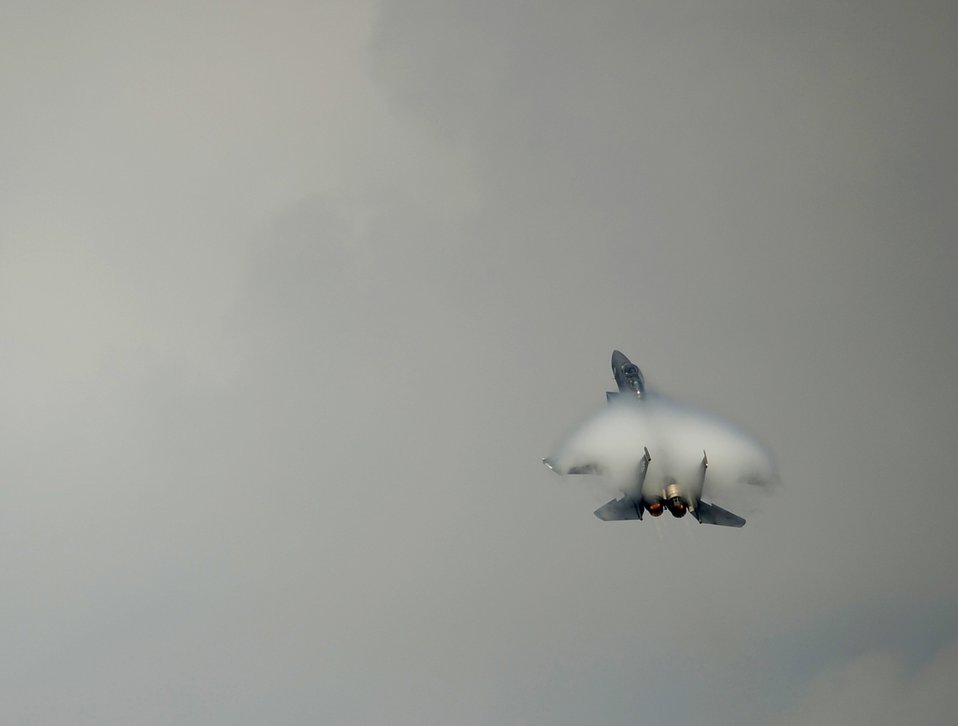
F-15E at Air Expo

An F-15E Strike Eagle pilot demonstrates the aircraft's maneuverability April 9, 2011, during the Charleston Air Expo at Joint Base Charleston S.C. The F-15E is a multirole fighter capable of air-to-surface and air-to-air combat.